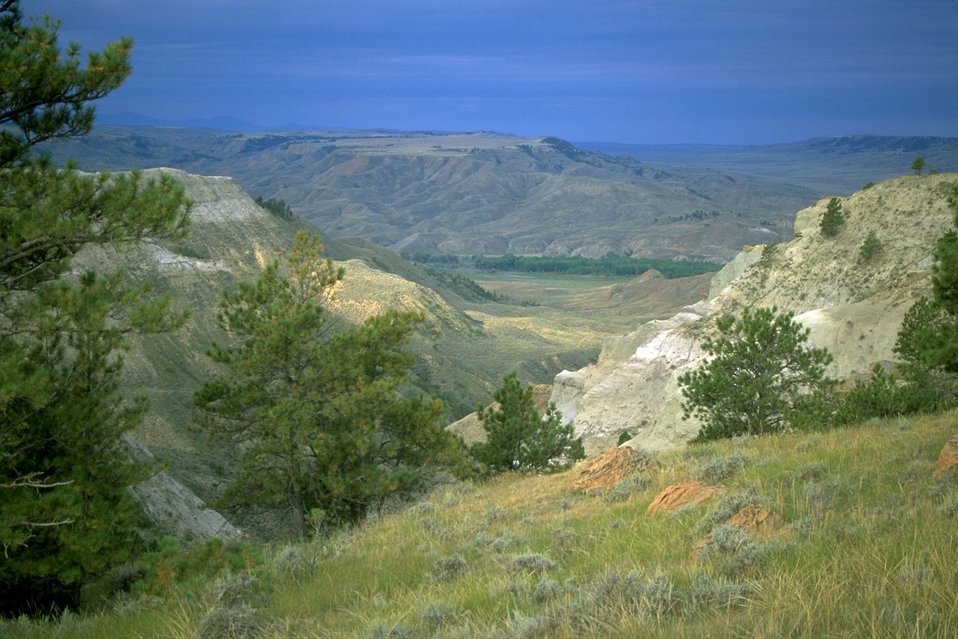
Missouri Breaks scenery in the Upper Missouri River Breaks National Monument